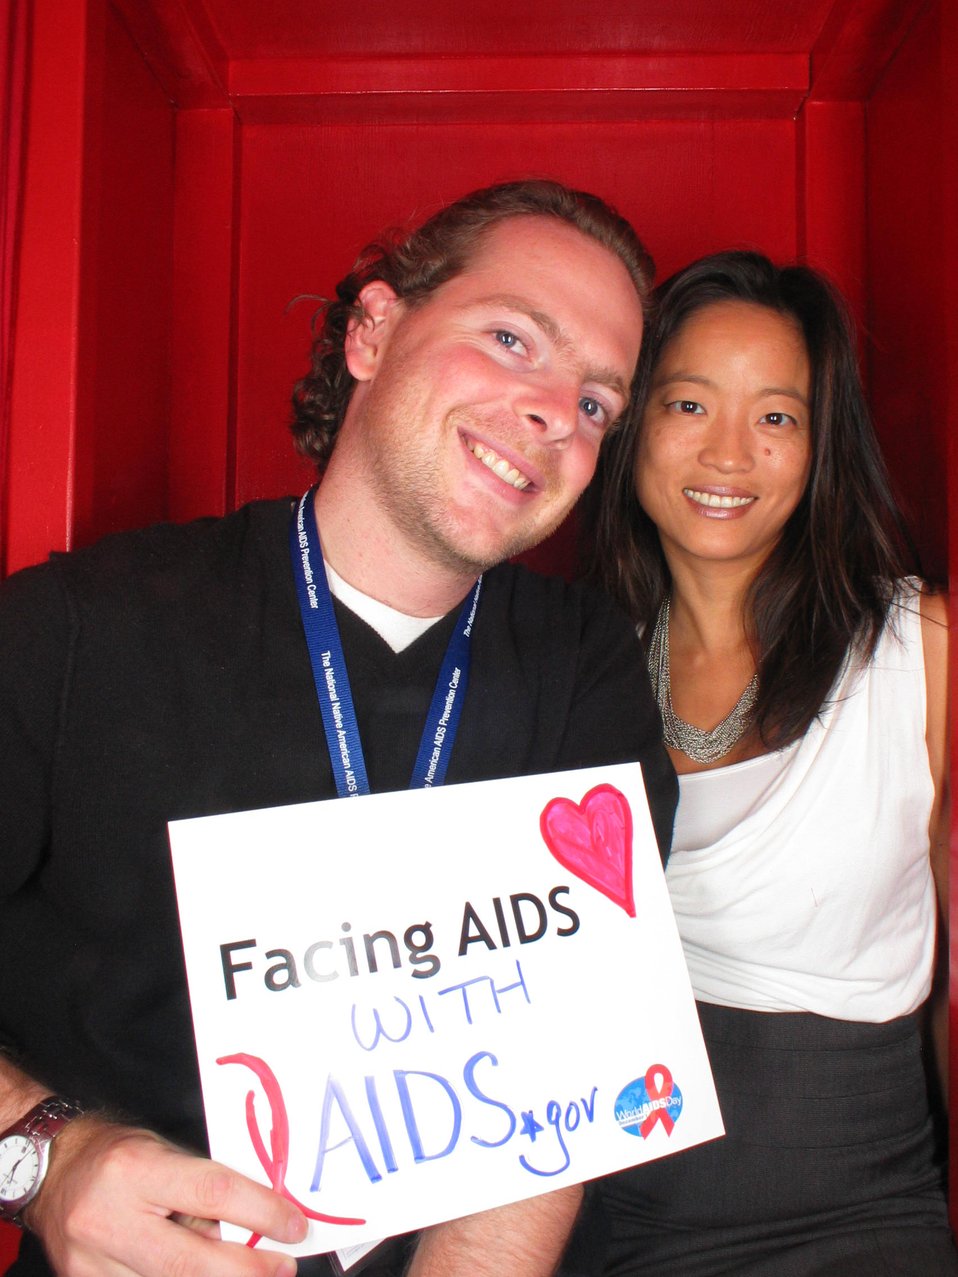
Facing AIDS with AIDS.gov